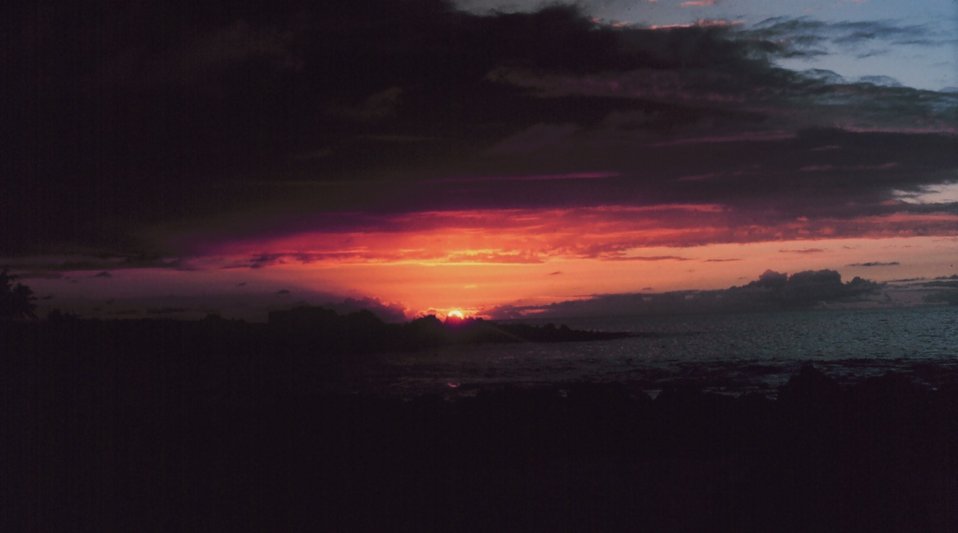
A Kona Coast sunset